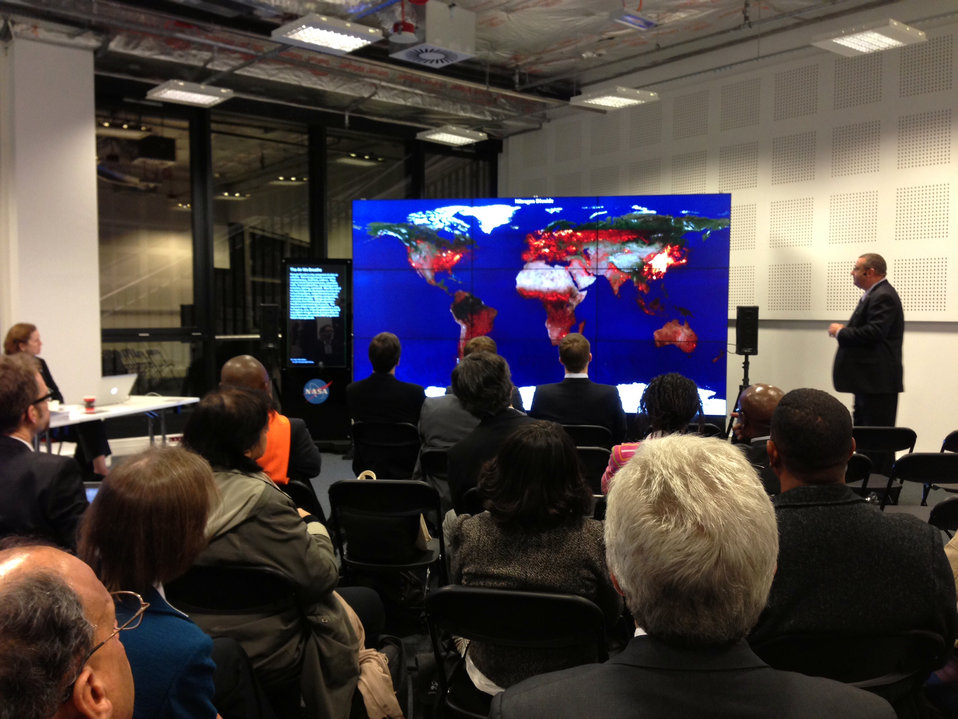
NASA's Doddridge Presents 'Aerosols and Atmospheric Composition'

Bruce Doddridge, scientist at NASA Langley Research Center, presents “Aerosols and Atmospheric Composition” on the NASA Hyperwall at the U.S. Center at the 19th Session of the Conference of the Parties to the UN Framework Convention on Climate Change (COP19) in Warsaw, Poland, on November 18, 2013.